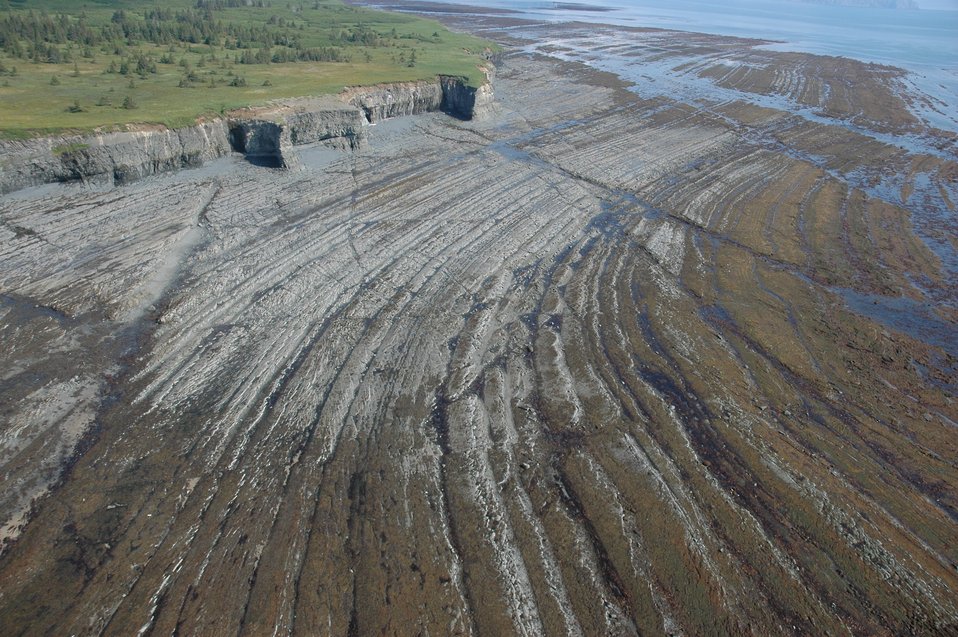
Aerial photograph. A remarkable display of differential erosion in folded strata at Contact Point. Contact Point was named by the United States Geological Survey because of the fault contact between two geological formations at this location.